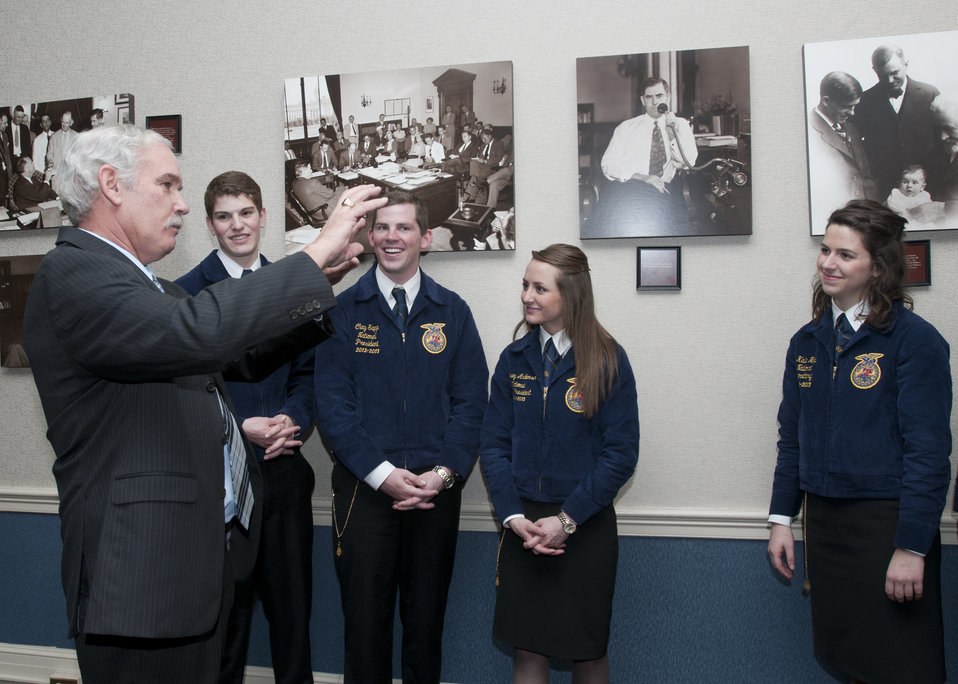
Agriculture Under Secretary for Farm and Foreign Agricultural Services (FFAS) Michael Scuse talks to (L to R) FFA National Central Region Vice President Brennan Costello, FFA National President Clay Sapp, FFA National Western Region Vice President Lindsey Anderson, and FFA National Secretary Kalie Hall in the Wallace room at the U.S. Department of Agriculture (USDA) in Washington, D.C., on Wednesday, Jan. 16, 2013.